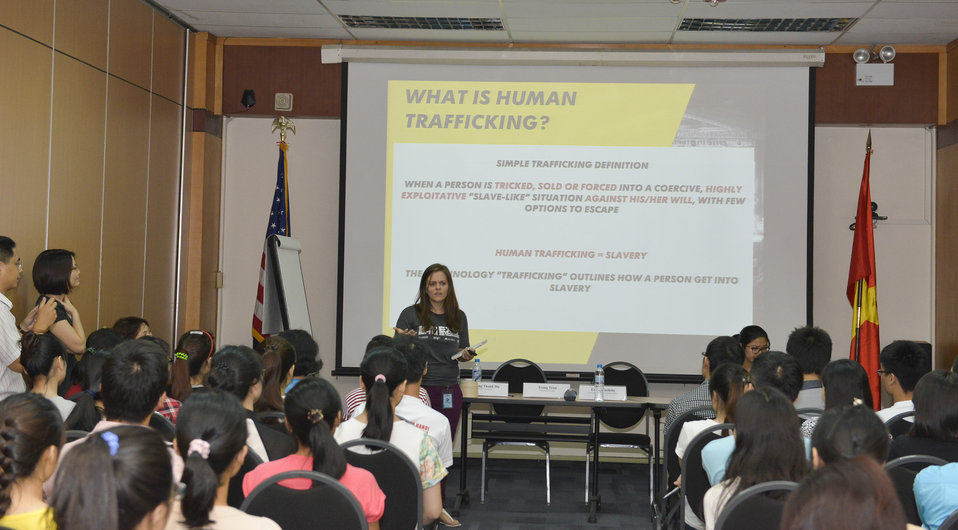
MTV Exit Talk to Engage Students in the Fight against Human Trafficking

Hanoi. June 5, 2014.